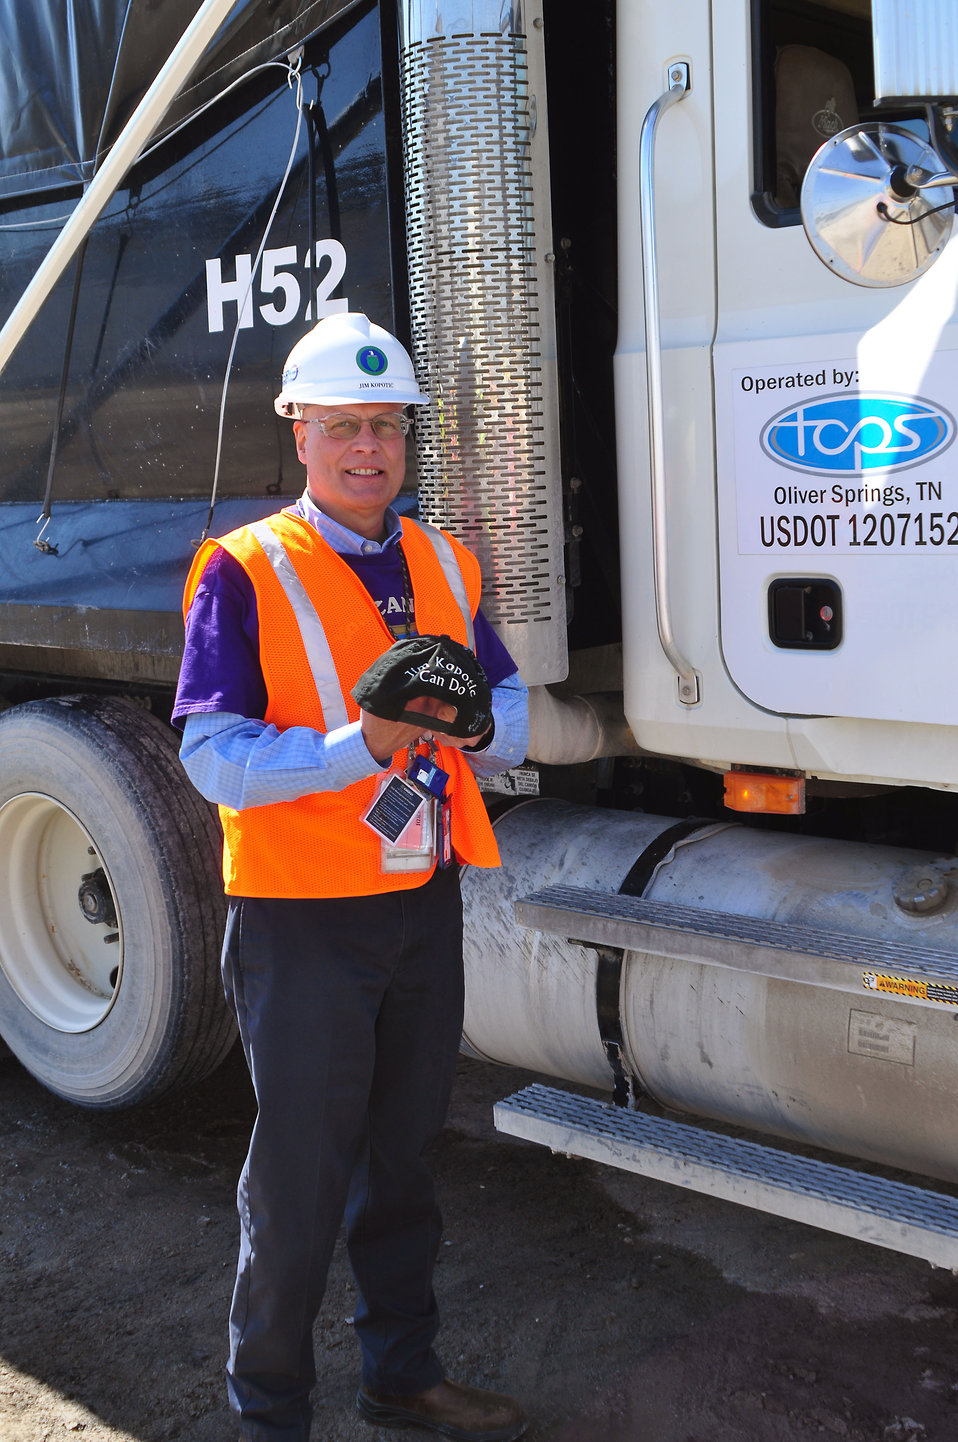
K-25 Demolition Last Load Jim Kopotic Oak Ridge 2014

14-032 DOE Photo by Lynn Freeny 3-11-214 Oak Ridge Tennessee